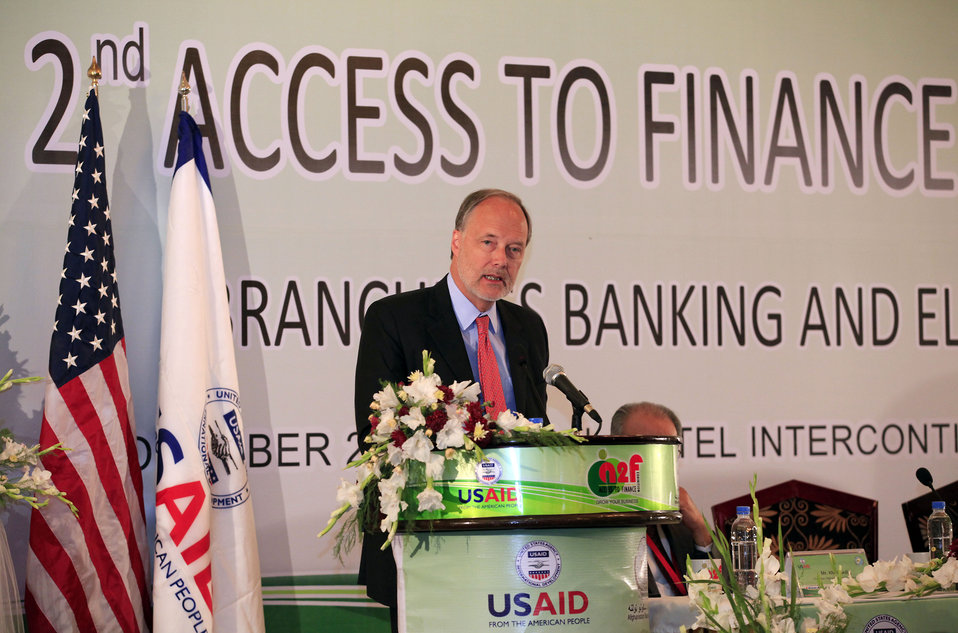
Ambassador Cunningham

U.S. Ambassador James B. Cunningham delivers remarks at the Second Access to Finance Exhibition in Kabul on Tuesday, October 29, 2013. Thousands of business representatives from across Afghanistan attended the exhibition promoting branchless banking and electronic payments.